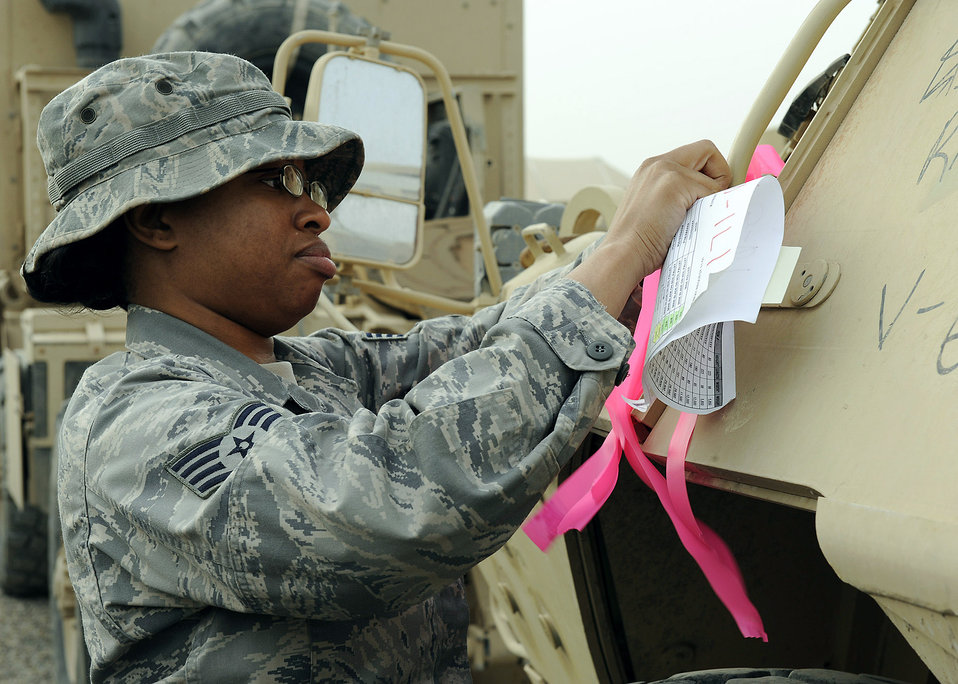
Airmen process more than $1 billion worth of equipment

Staff Sgt. Chayla Gooch marks the armored security vehicle ensuring the right vehicles get picked up for transport Feb. 27 at Camp Liberty, Iraq. This vehicle is a part of a convoy going to Kuwait with approximately 30 semitrucks loaded with all types of military vehicles. Sergeant Gooch is assigned to the 732nd Expeditionary Logistical Readiness Squadron, 586th Task Force. She is a native of Marksville, La., and is deployed from Langley Air Force Base, Va.